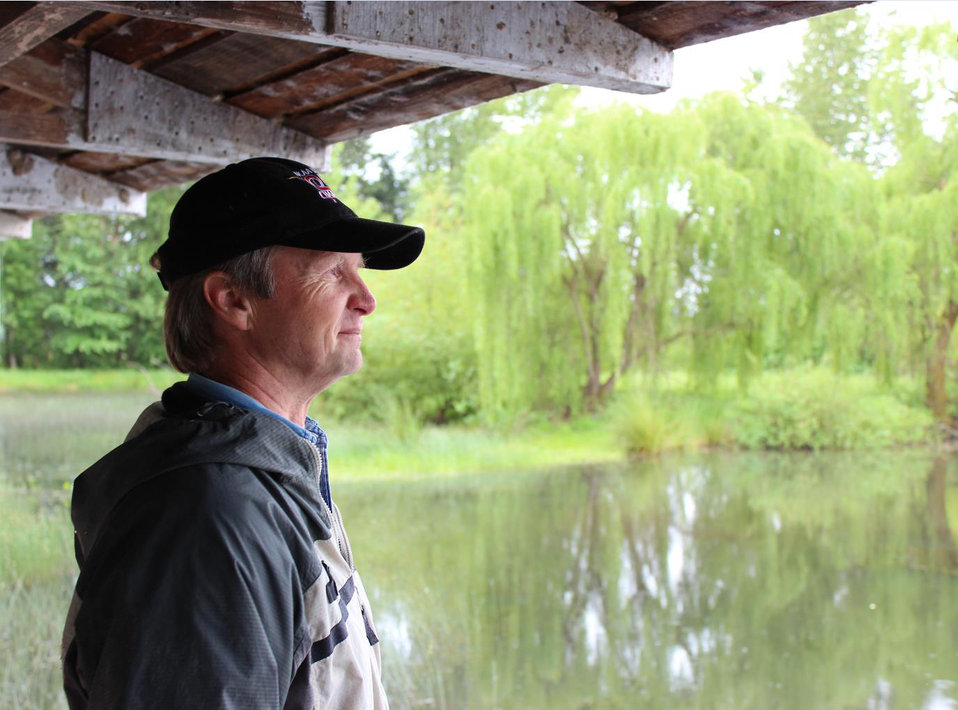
ACEP 2

Oregon landowner Dave Budeau said he dreamed of protecting wetlands. A U.S. Department of Agriculture (USDA) Natural Resource Conservation Service (NRCS) led a conservation partnership that helped Budeau restore and enhance these wetlands, providing habitat for native fish and birds.